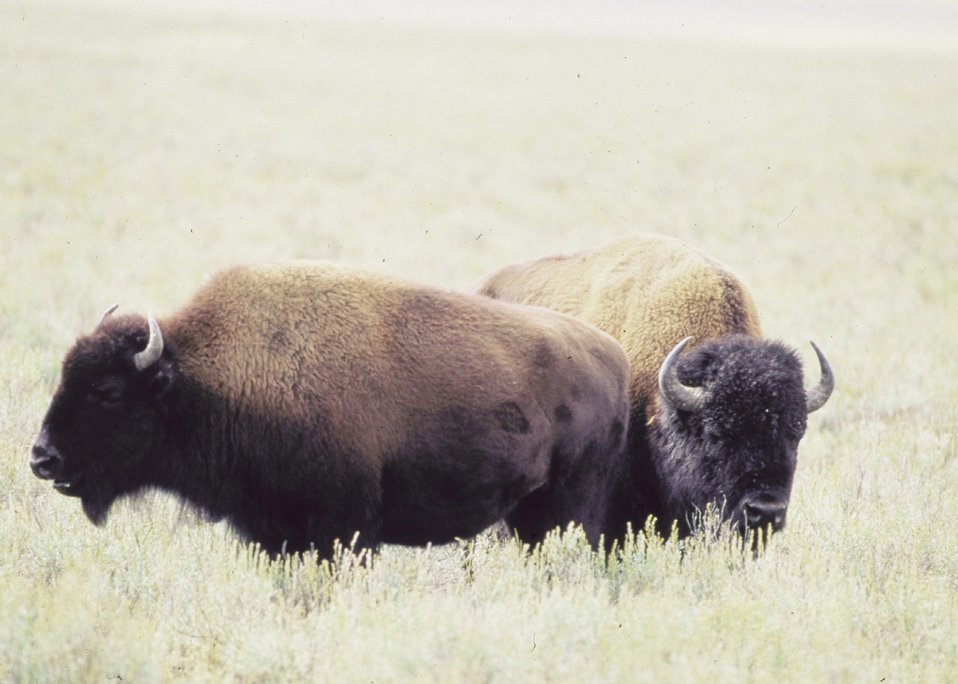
Buffalo grazing on Wyoming prairies.